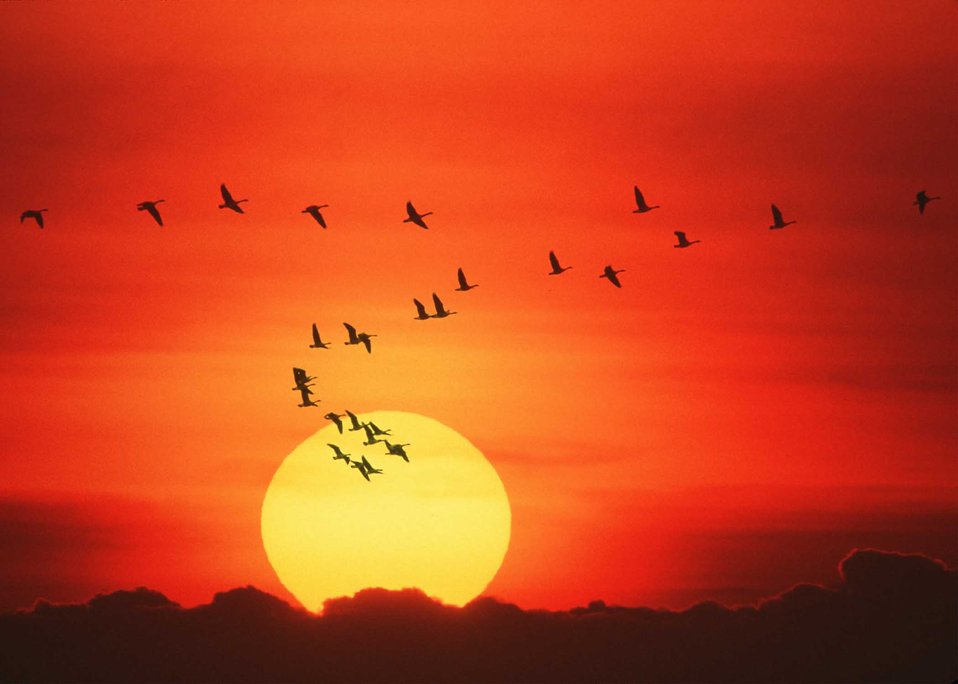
Canada geese and a sunset

Canada geese migrate above Maryland's eastern Shore with a sunset in the background.